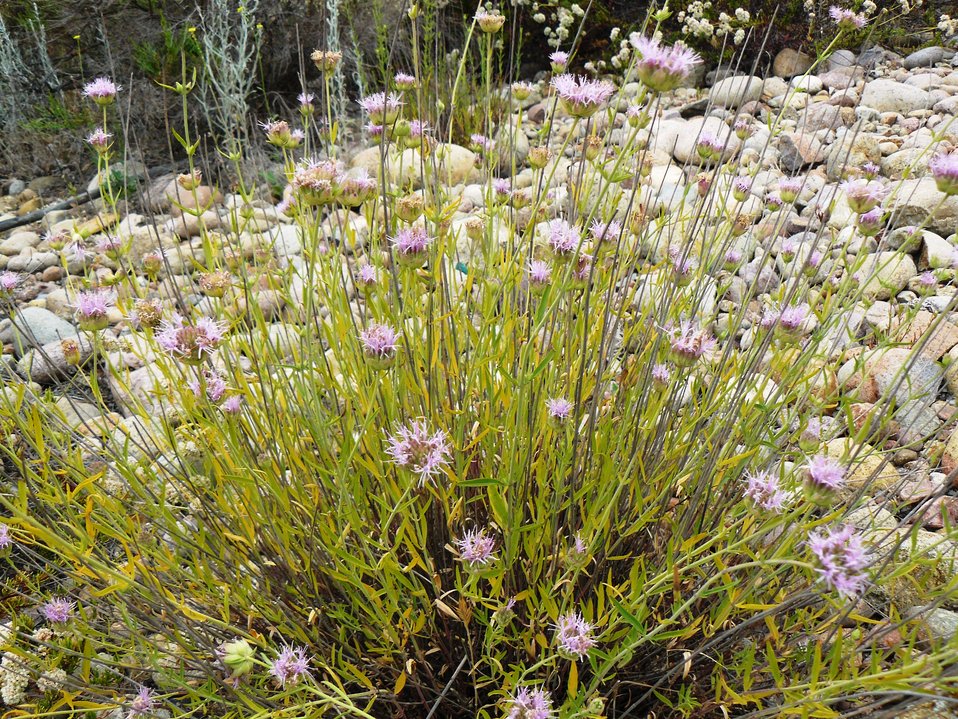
Willowy monardella (Monardella viminea) is a perennial herbaceous plant in the mint family. This endangered plants is primarily found in sandy washes and floodplains in coastal sage scrub or riparian scrub vegetation.